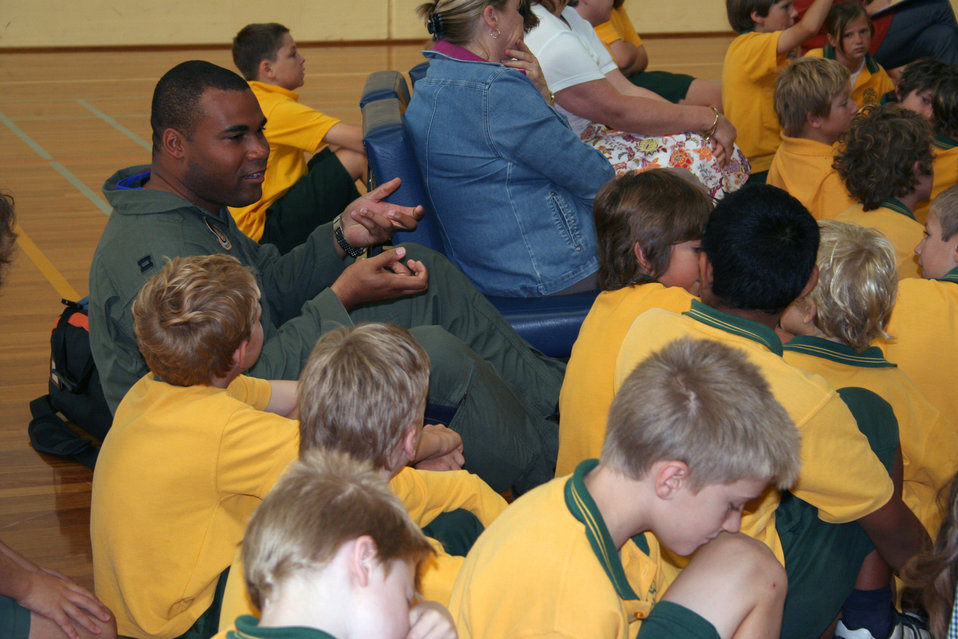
Airmen visit Australian primary school

Capt. C.D. Henderson talks with children from Lara Primary School in Victoria, Australia, March 22 about his experiences in the Air Force. Captain Henderson is an electronic warfare officer with the 961st Airborne Air Control Squadron at Kadena Air Base, Japan.